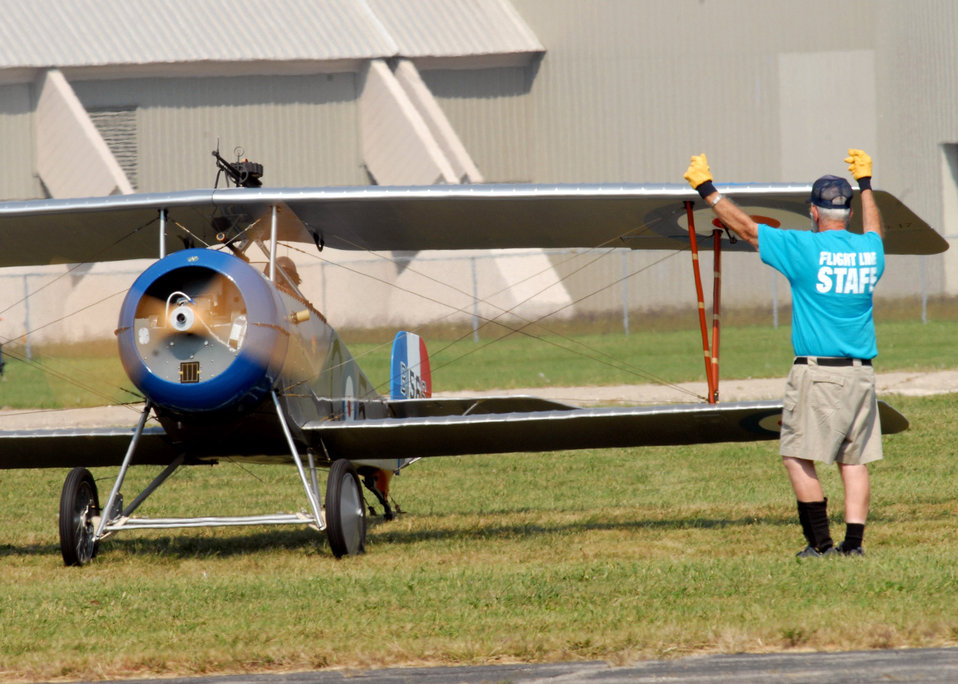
World War 1 Fly In

An aircraft taxis to park after competing in a